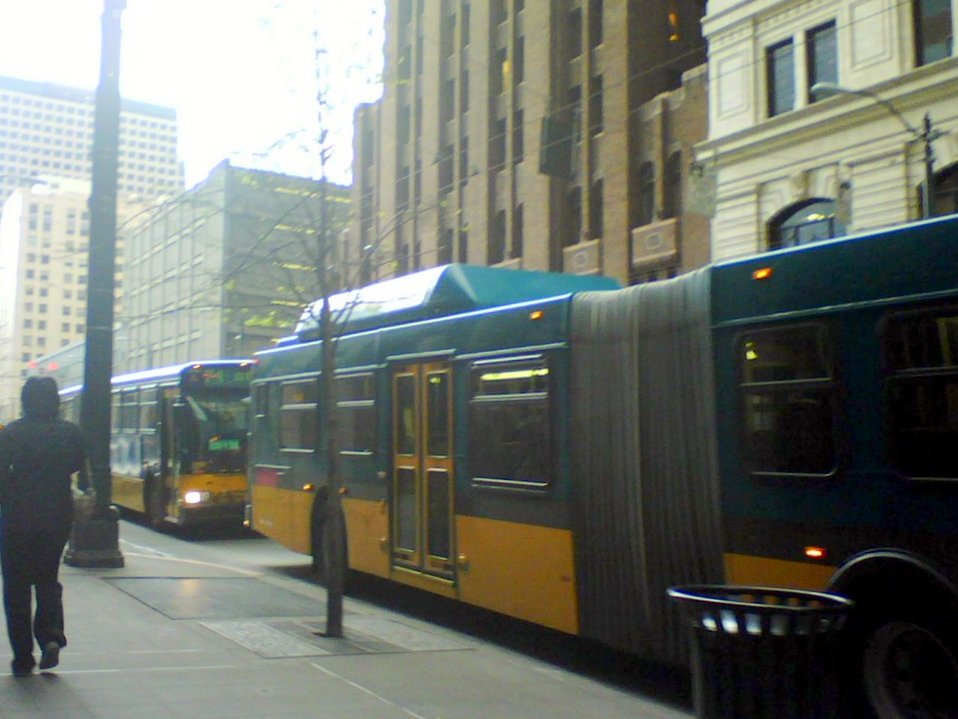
Picture Taken By Spencer Lowe Metro Buses in Seattle